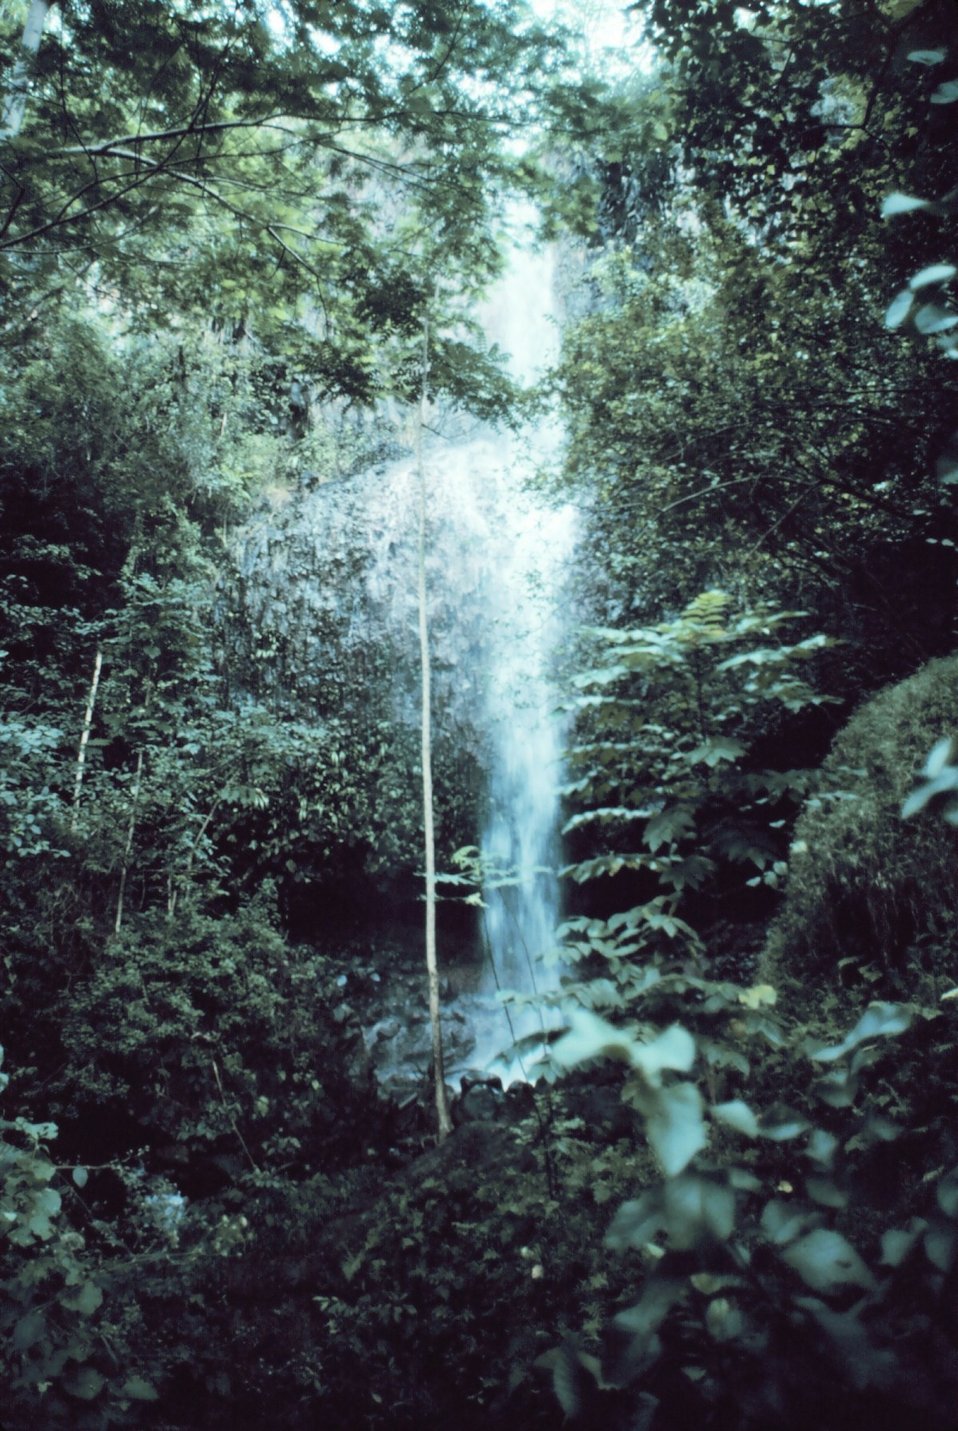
Waterfall on Kauai seen through the rain forest